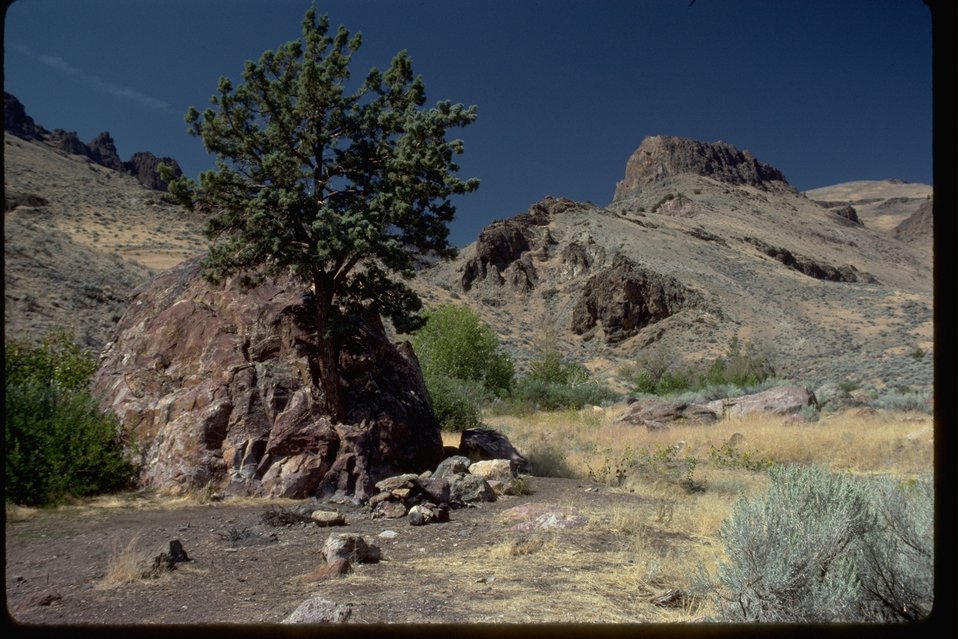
A popular, informal campsite at Pike creek on private land (Alvord Ranch) on the east side of Steens Mountain.